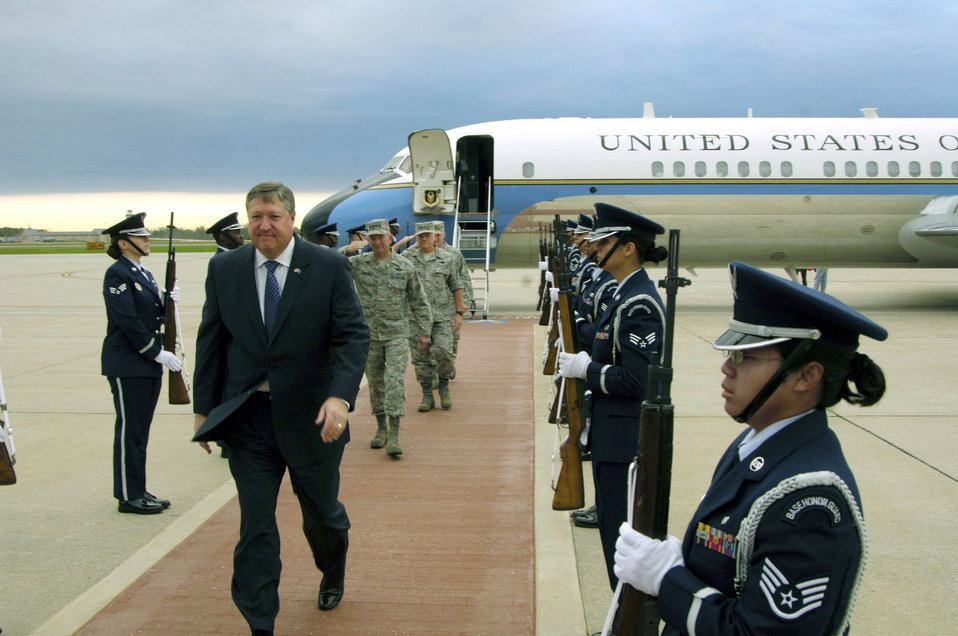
Secretary Donley visits Scott AFB

Secretary of the Air Force Michael B. Donley deplanes Oct. 22 at Scott Air Force Base, Ill. The arrival marked Secretary Donley’s first visit to this Air Mobility Command base.